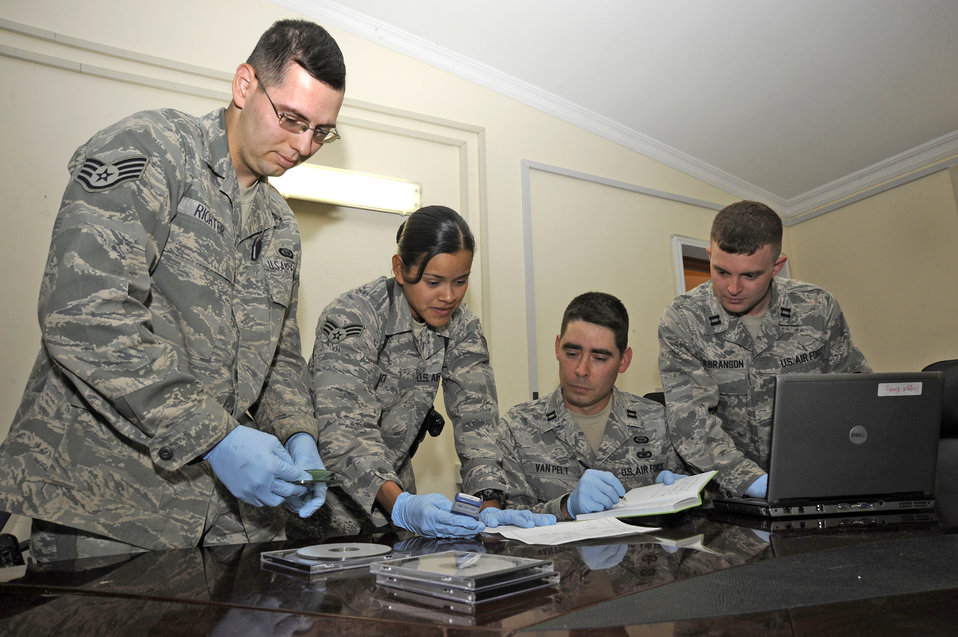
DOMEX dominates exploitation efforts in AOR

Tactical Document and Media Exploitation Brigade Support team members triage evidence taken from captured enemies here Aug. 21. The DOMEX mission is to exploit information from captured enemy documents, electronic media and cell phones. The team's work contributes to theater and national intelligence efforts in support of targeting and detainee operations, force protection and criminal prosecution.